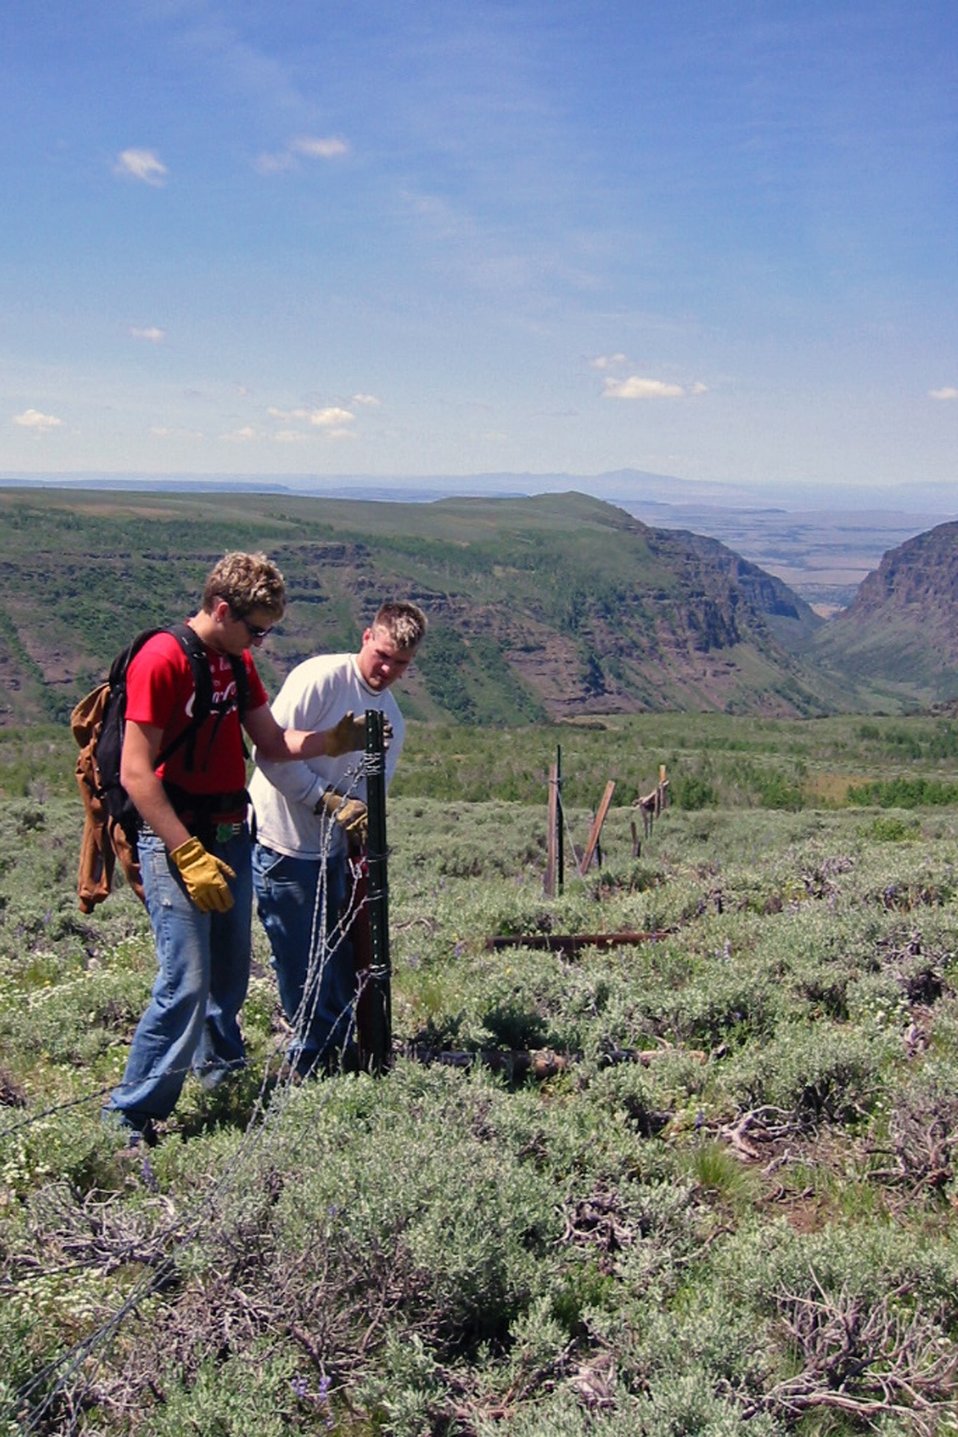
Volunteers work with BLM to remove over a 100 miles of old fence.